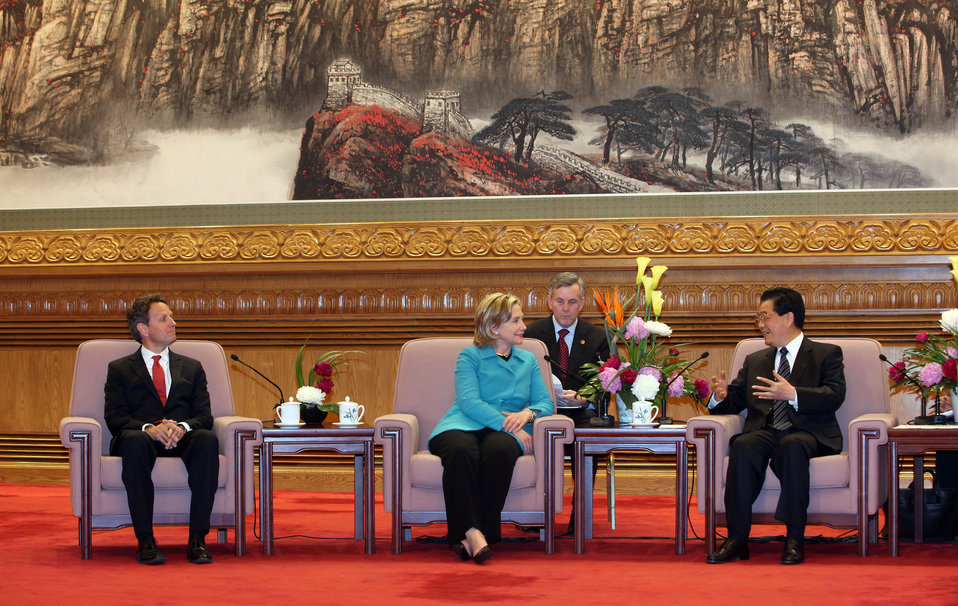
SandED 5/25/10

Secretary Geithner, Secretary of State Clinton and Chinese President Hu Jintao at The Great Hall of the People in Beijing.